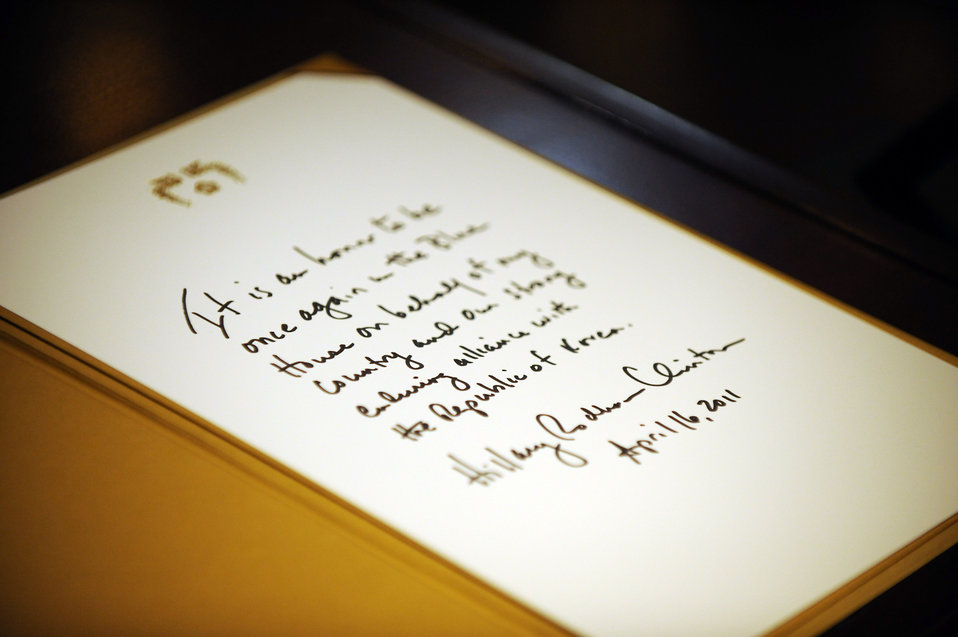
Secretary Clinton's Note in the Guest Book Is Photographed

U.S. Secretary of State Hillary Rodham Clinton's note in the guest book at the Republic of Korea Presidential Blue House in Seoul, South Korea, is photographed on April 17, 2011.